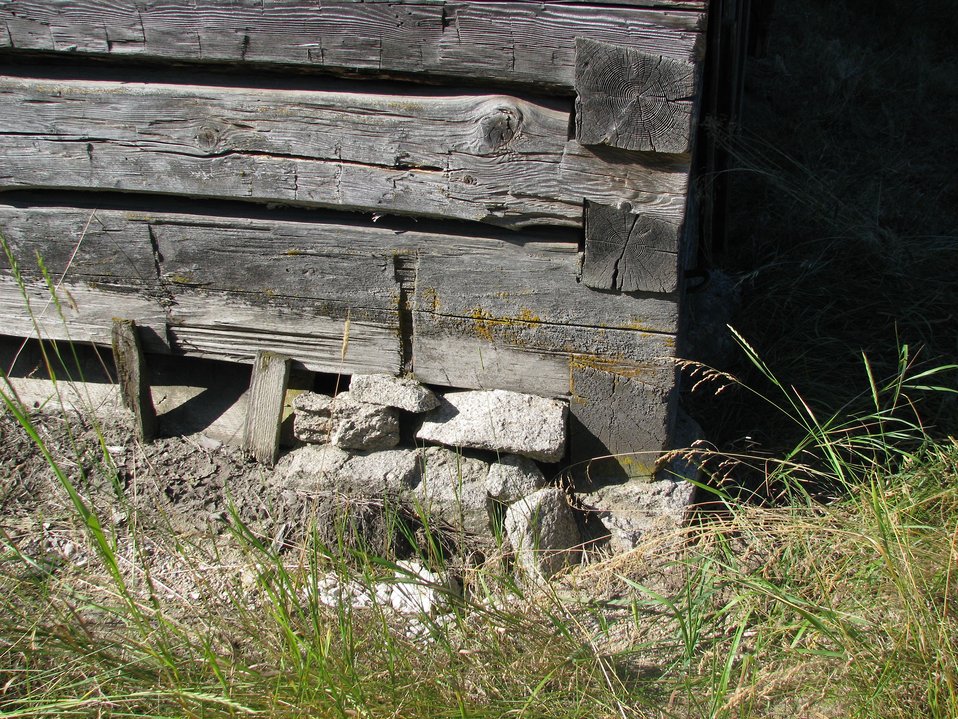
Hartnett Homestead -- Little Pend Oreille NWR, Washington